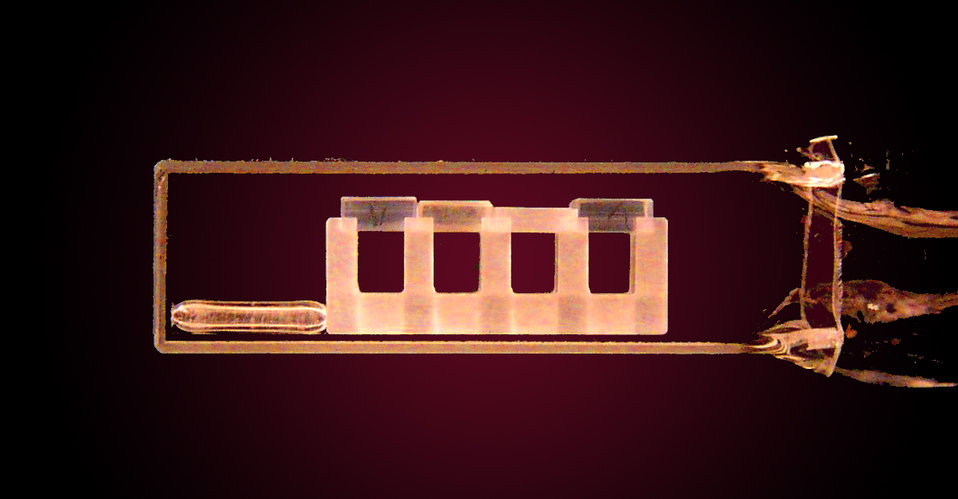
Bose-Einstein Condensate

JILA scientists measured how temperature affects the Casimir-Polder force using an apparatus that holds four small squares of glass inside a vacuum chamber. A cloud of ultracold atoms in a Bose-Einstein Condensate (BEC) was held a few micrometers below one piece of glass, and the force was calculated based on the wiggling of the BEC. Warmer glass magnified the attraction between the surface and the atoms.

Credit: E. Cornell group/JILA